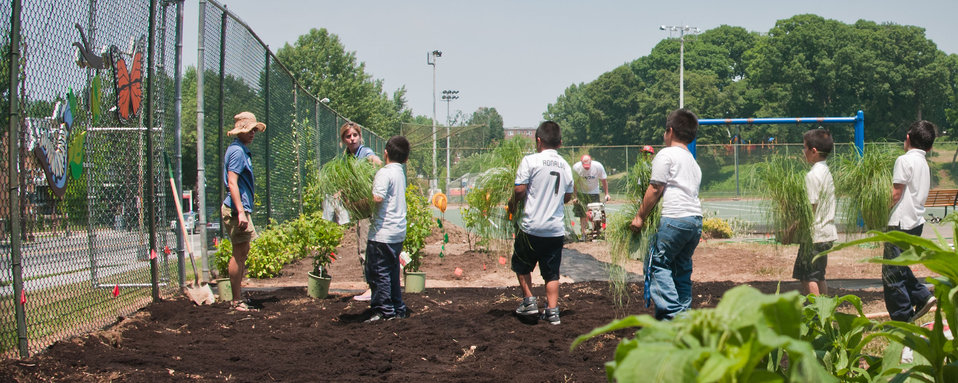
U.S. Department of Agriculture Outreach and Education Coordinator Annie Ceccarini (second from left) directs several students from William B. Powell Elementary School were allowed to help in the making of the People’s Garden, at the children’s school on Thursday, June 9, 2011 in Washington, DC. Volunteers from U.S. Department of Agriculture People’s Garden Executive Master Gardener program and Washington Capitals hockey organization, along with defenseman Jeff Schultz, and mascot Slapshot transformed a grassy corner of the Powell Elementary School playground into a habitat garden and outdoor learning area. Executive Master Gardeners led the volunteer project teams. The Washington Capitals donated new tools; tool shed; garden materials; lunch; most of the volunteers and more. The completed projects included a walking path; tiling of garden plots; planting a bird habitat garden, pollinator garden and native grasses; caterpillar and butterfly plaques; hummingbird and bat house, and tool shed. The garden will later include a picnic area, outdoor classroom, hummingbird garden, Monarch watch garden, native bee garden, and birdbath. USDA challenges its employees to establish People's Gardens at USDA facilities worldwide or on this case, help communities create gardens. People's Gardens vary in size and type, but all have a common purpose - to help the community and the environment.